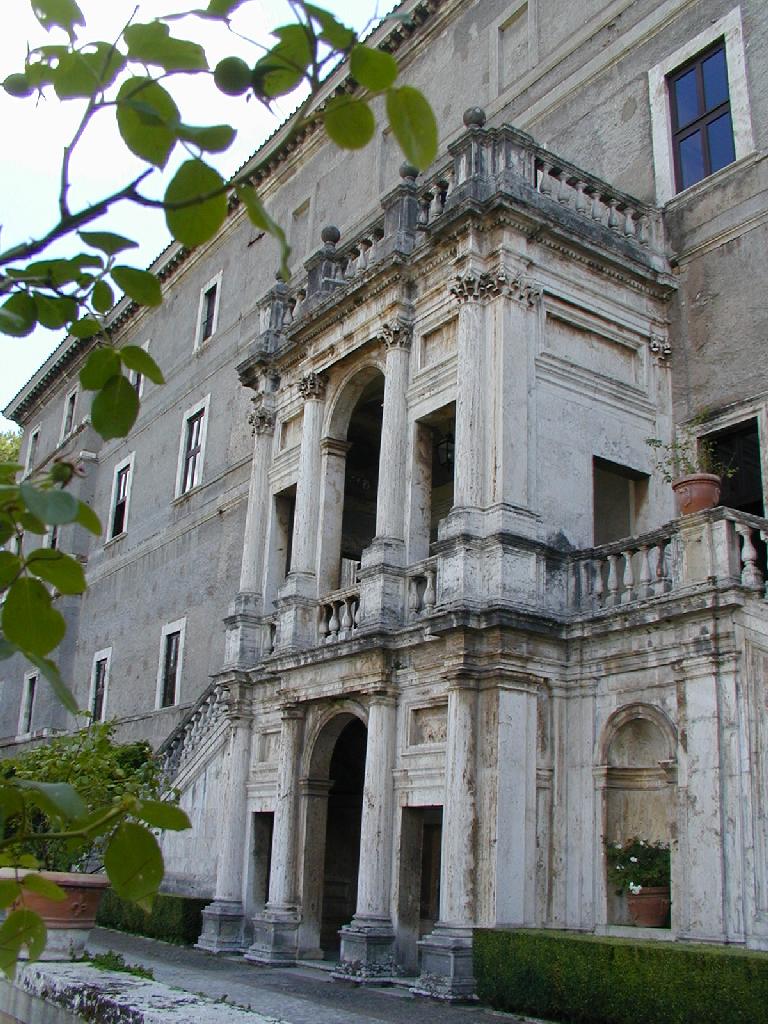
000910 tivoli v d este 47 facciata